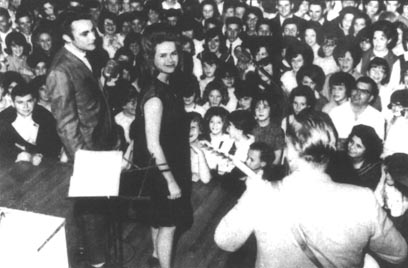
Snapshot photo of swamp pop duo Dale & Grace, circa 1963, from author's collection.